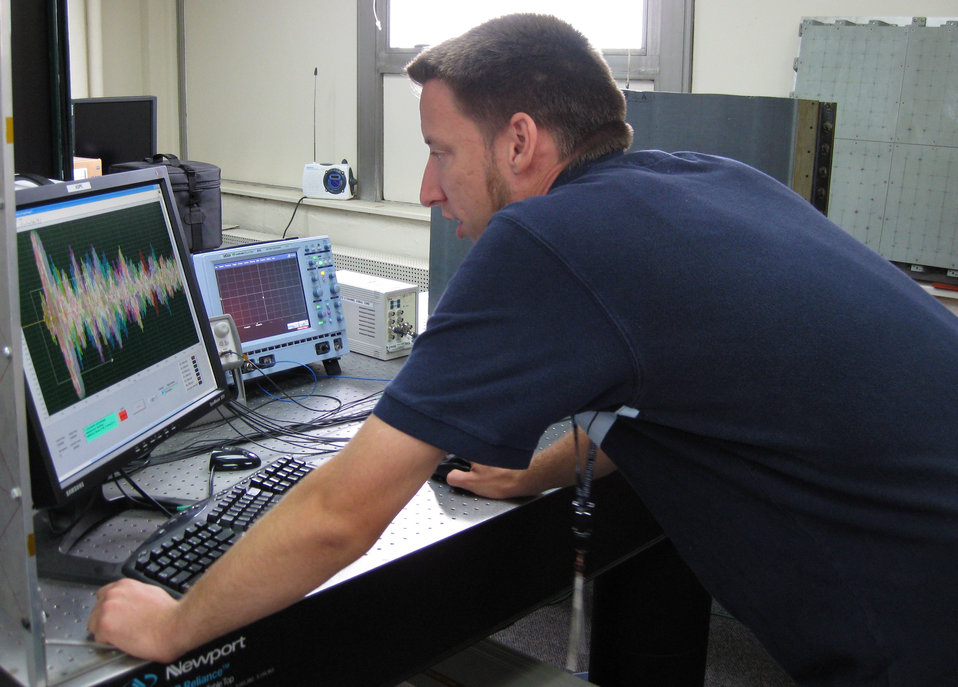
System helps determine 'health' of Air Force aircraft

Kevin Brown, an Air Force Research Laboratory engineer at Wright-Patterson Air Force Base, analyzes signals from a piezoelectric sensor array attached to a Global Hawk test article that has been subjected to impact loads. The sensor array, which can be used to detect structural damage, is one component of an Integrated Systems Health Management system.